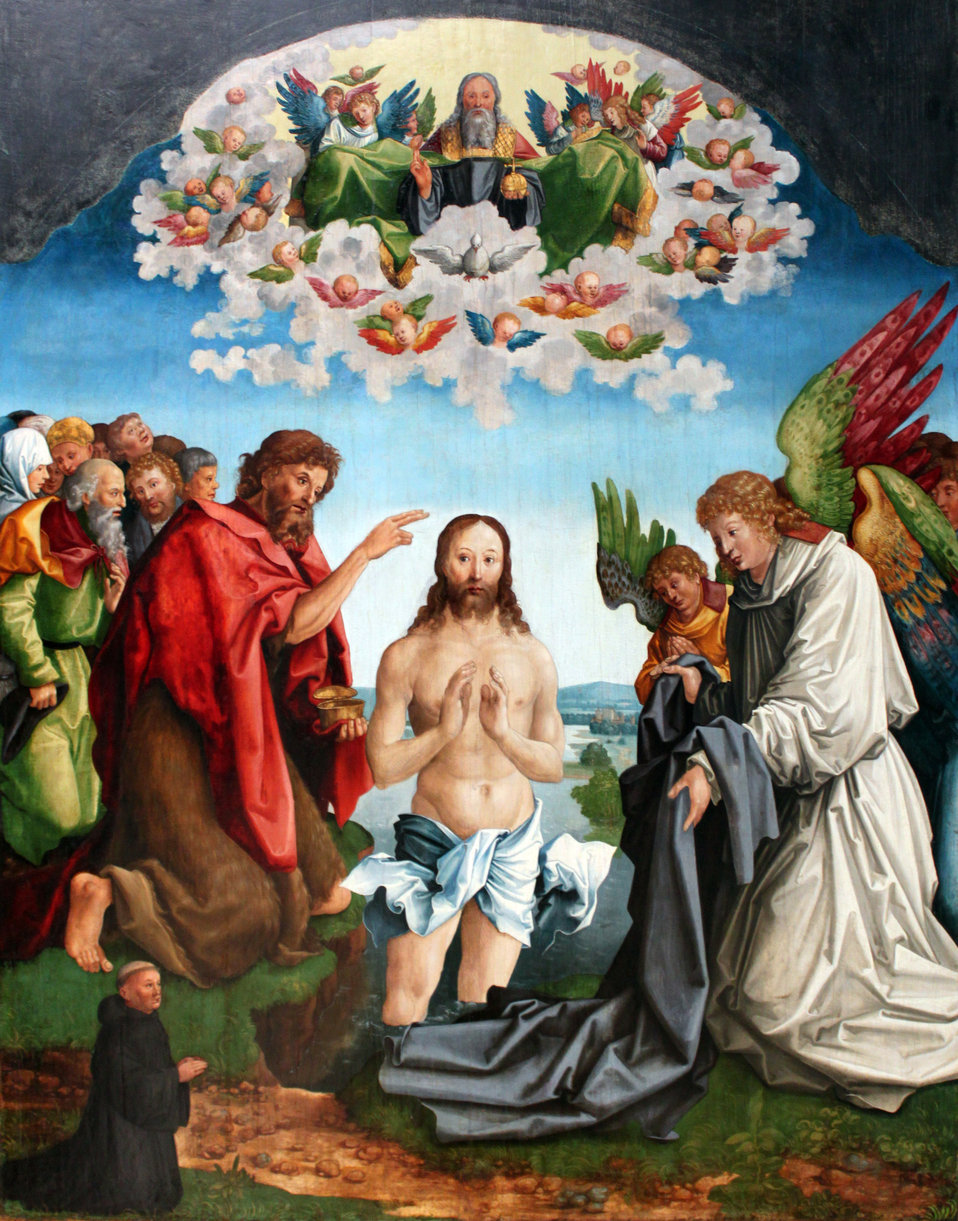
1517 Traut Taufe Christi anagoria